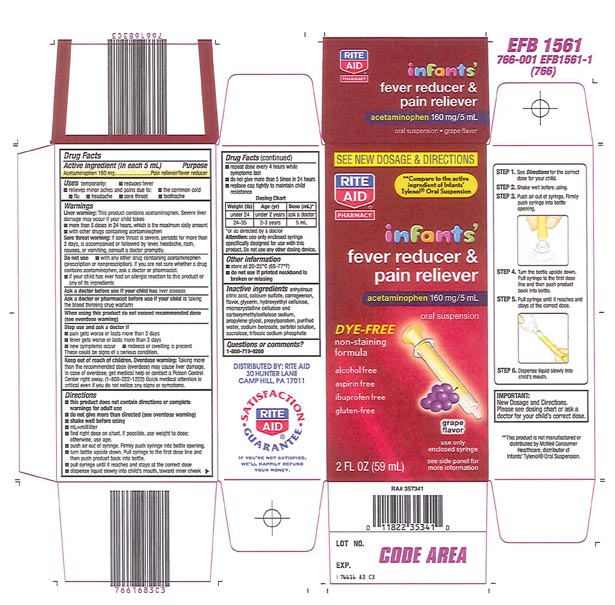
Recalled - Acetaminophen infant suspension liquid

November 1, 2013 – Product Recall – Perrigo Initiates Nationwide Voluntary Product Recall of Acetaminophen Infant Suspension Liquid, 160 Mg/5 Ml, Due to a Potential Defect with the Co-packaged Oral Syringe.